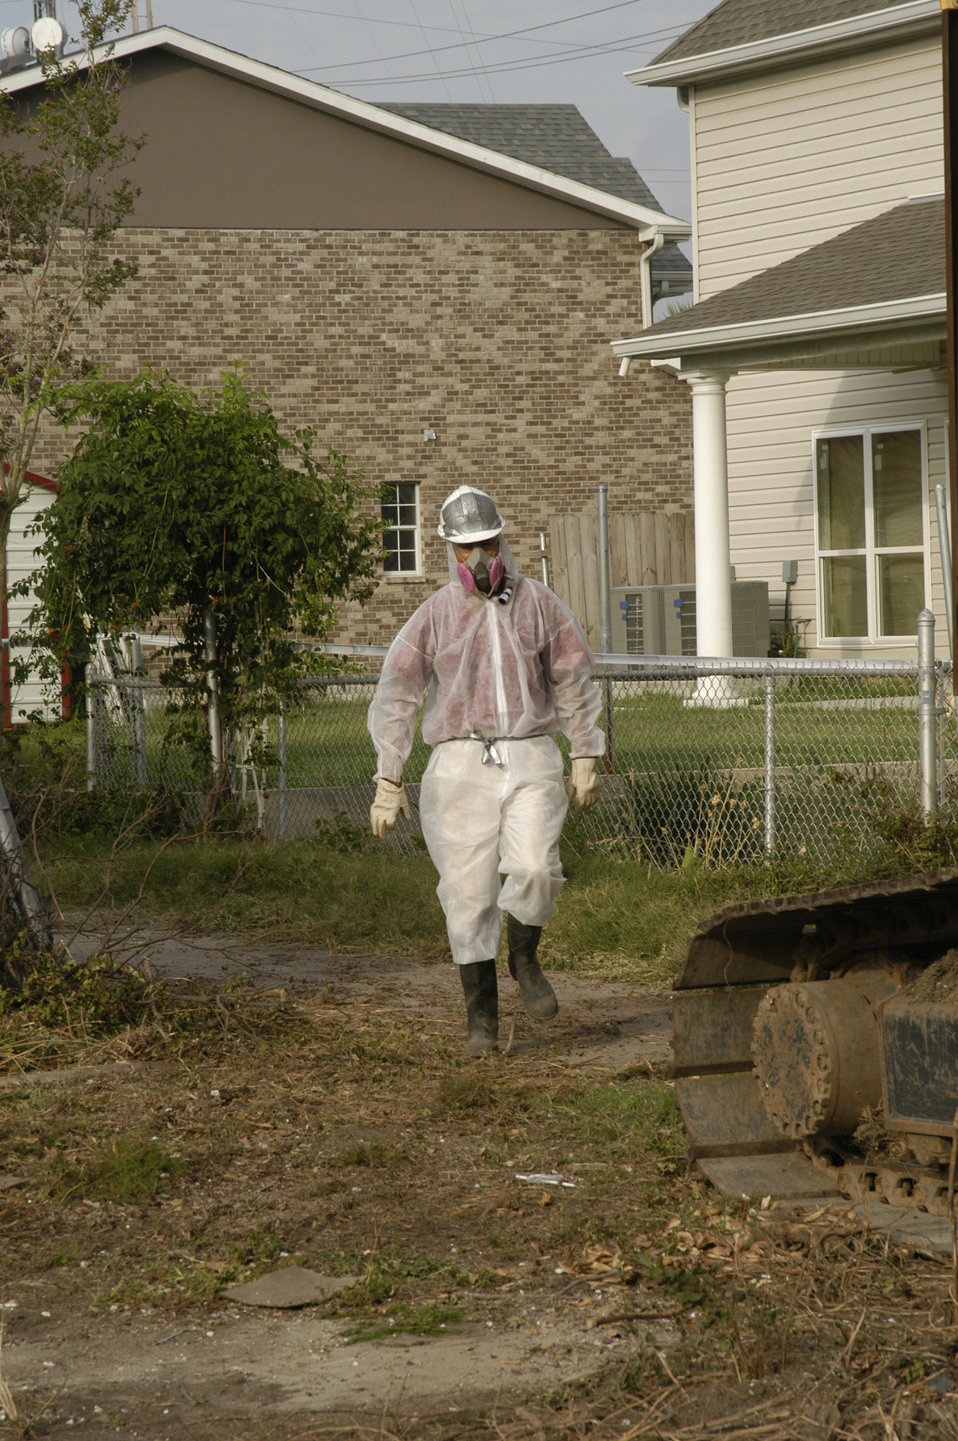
Many of the older homes and buildings in the New Orleans, LA, locale that were destroyed by Hurricane Katrina contained asbestos material (i.e. asbestos roofing tiles, transite siding, insulation, floor tiles, and popcorn ceilings). The U.S. Army Corps of Engineers (USACE) was mandated to follow strict environmental protocols in the demolition of these homes that were designated Regulated Asbestos Containing Material (RACM) demos. Personnel working inside the “hot zone” wore special suits with a respirator to prevent ingestion of asbestos particulates that might become airborne during the demolition project.